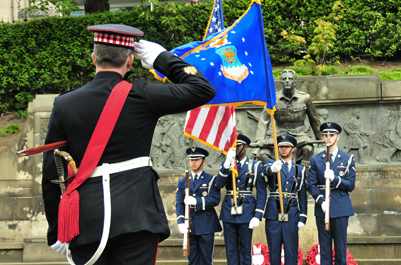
Liberty Airmen pay homage to fallen

Garrison Sgt. Maj. Graham White salutes the 48th Fighter Wing Honor Guard during a Memorial Day ceremony honoring fallen heroes at the Scottish-American War Memorial May 30, 2011, in Edinburgh, Scotland. This year marks the 77th annual Scottish-American Memorial Day service at